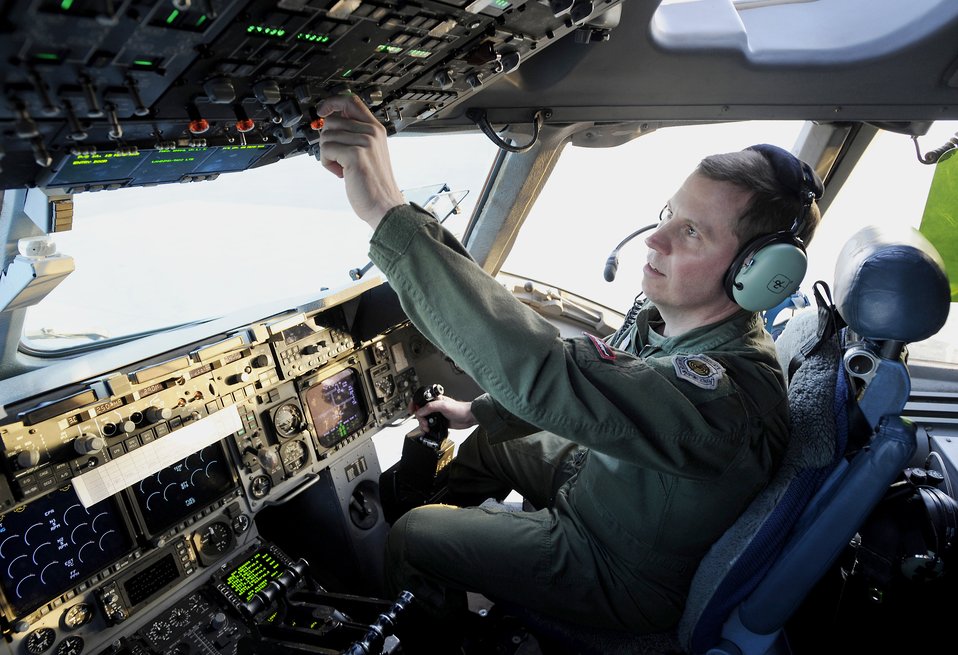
Commander flies C-17

Col. Thomas Bergeson, 3rd Wing commander and F-22 Raptor pilot, gets comfortable on the flight deck of a C-17 Globemaster III before takeoff from Elmendorf Air Force Base, Alaska, March 26, 2010. This is Colonel Bergeson's first time behind the controls of the aircraft.